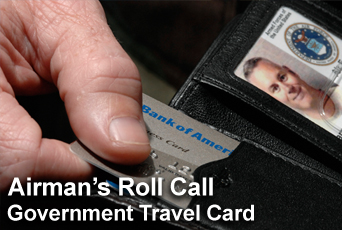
Airman's Roll Call: Government travel card a benefit

This week's Airman's Roll Call focuses on the government travel card, a benefit available to Department of Defense employees with the understanding it will not be abused or misused in any way.